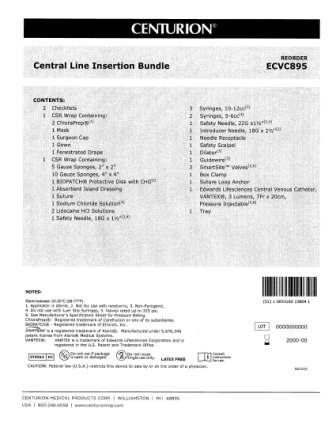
RECALLED - Convenience kits which contain bacteriostatic sodium chloride solution by American Regent

April 1, 2011 - Product Recall - Centurion Medical Products Initiates Voluntary Recall of Customized Convenience Kits (including select Central Venous Catheter, PICC Insertion, and VAD Trays) that contain American Regent’s Bacteriostatic Sodium Chloride Injection, USP, 0.9% 30 mL Multiple Dose Vials.